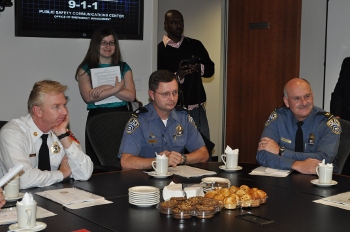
Next gen conference

Next Generation 9-1-1; Arlington, VA. November 23, 2010